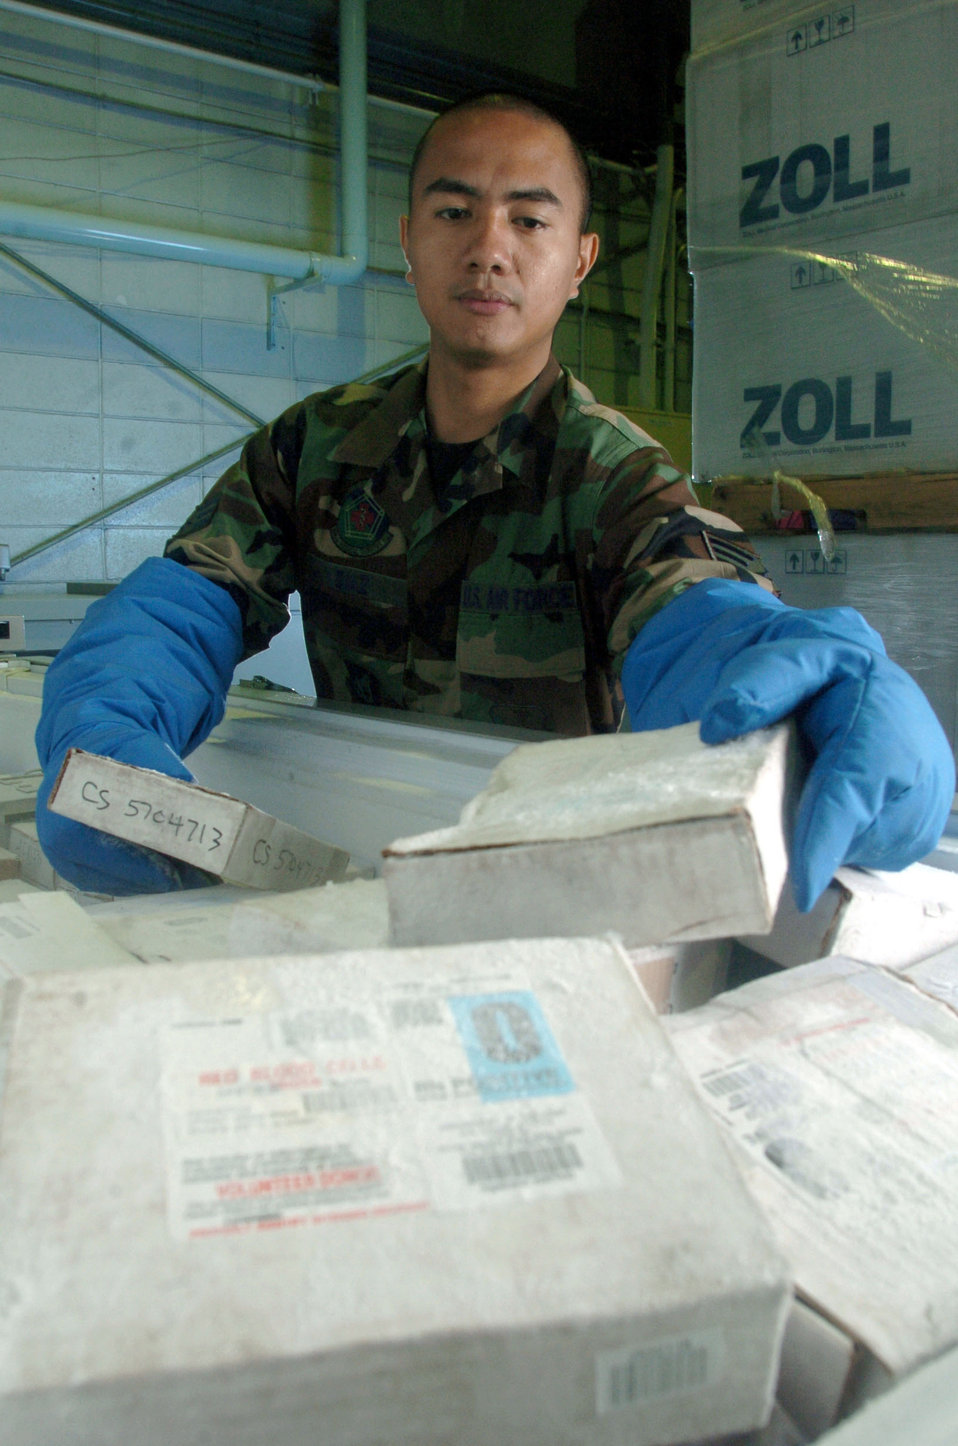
Frozen blood

YOKOTA AIR BASE, Japan -- Senior Airman Al Diaz stores boxes of blood inside a freezer at the war reserve materiel warehouse here Sept. 10. The blood supplies are kept here for military combat and contingency operations. Airman Diaz is a medical logistics technician assigned to the 374th Medical Group.